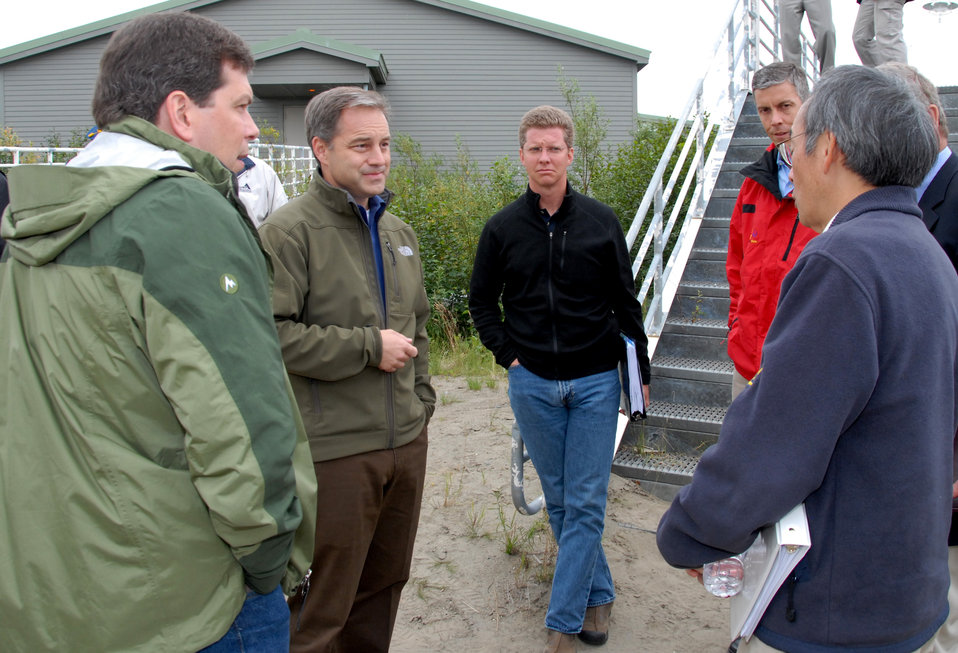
Rural Tour 0026

Rural Tour Alaska Aug 2009